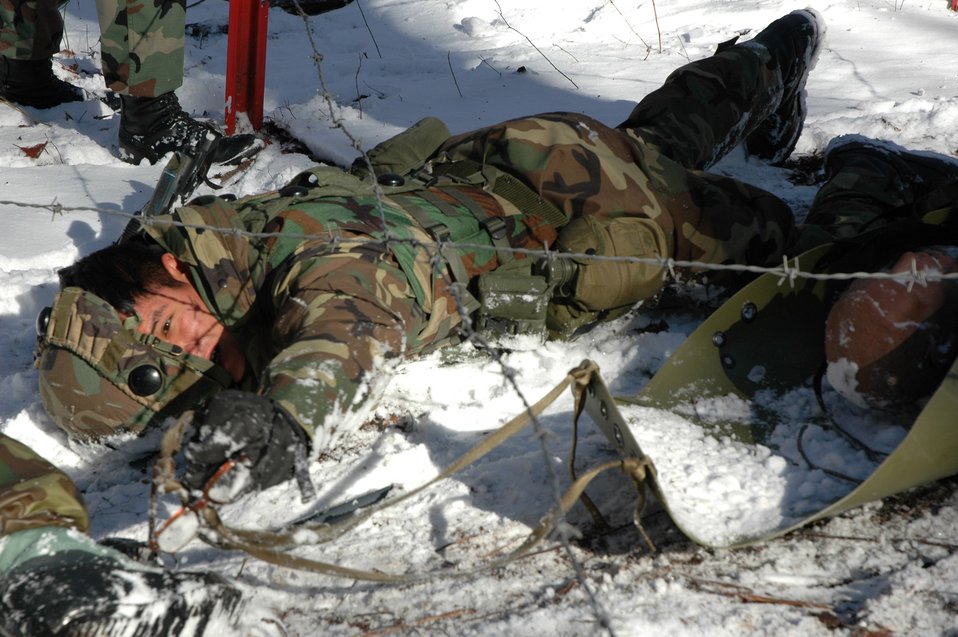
Winter training

FORT DIX, N.J. (AFPN) -- Airman 1st Class Sam Alvarado drags a litter carrying a makeshift patient underneath barbed wire. The scenario was part of the Air Mobility Warfare Center's Integrated Contingency Skills Training here Jan. 15. More than 100 Airmen from Air Mobility Command are participating in this program, which compliments wing-level training programs around the command. Airman Alvarado is with the 43rd Security Forces Squadron at Pope Air Force Base, N.C.